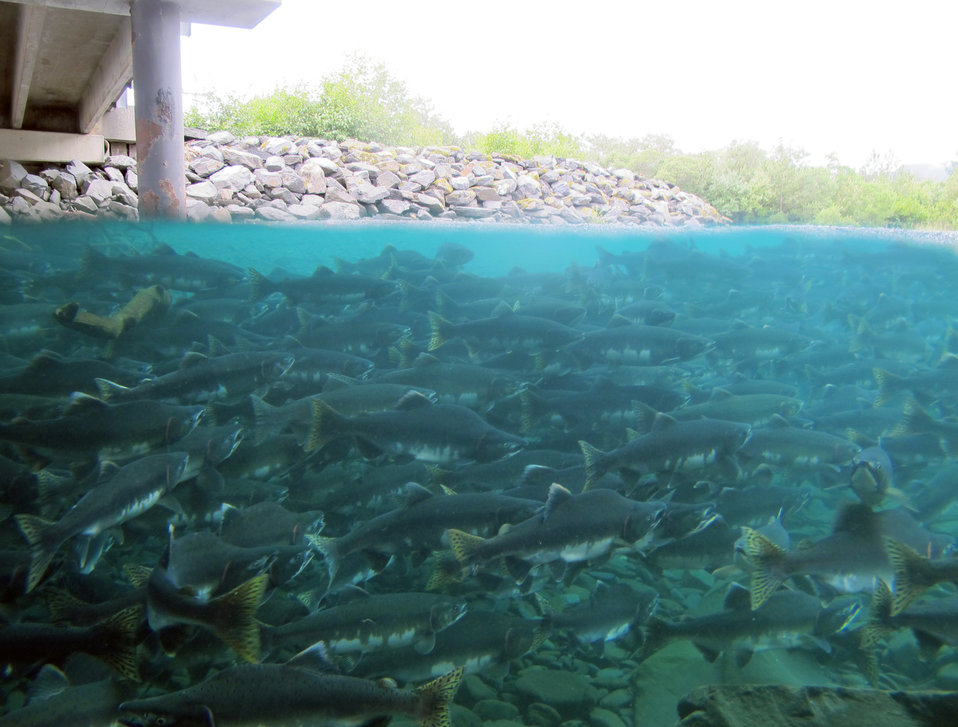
Pink salmon, Kodiak

Pink (humpy) salmon migrating up Sargent Creek on Kodiak Island. USFWS/K.Mueller